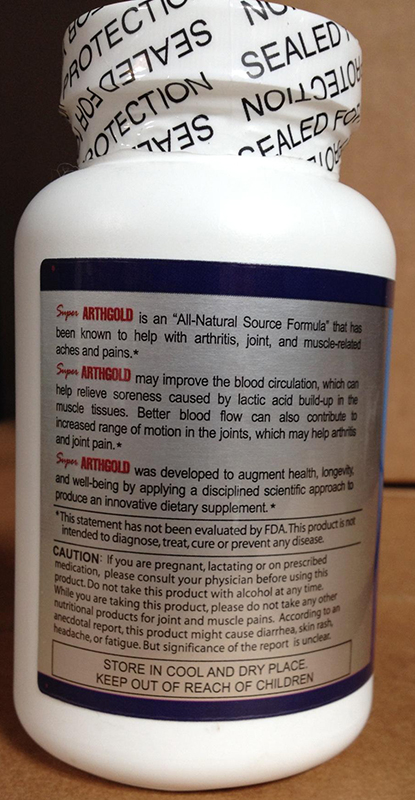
RECALLED – Dietary Supplement - Super Arthgold

April 21, 2014 – Product Recall – Nano Well-being Health Inc. Issues Voluntary Nationwide Recall of Super Arthgold Due to Undeclared Ingredients.